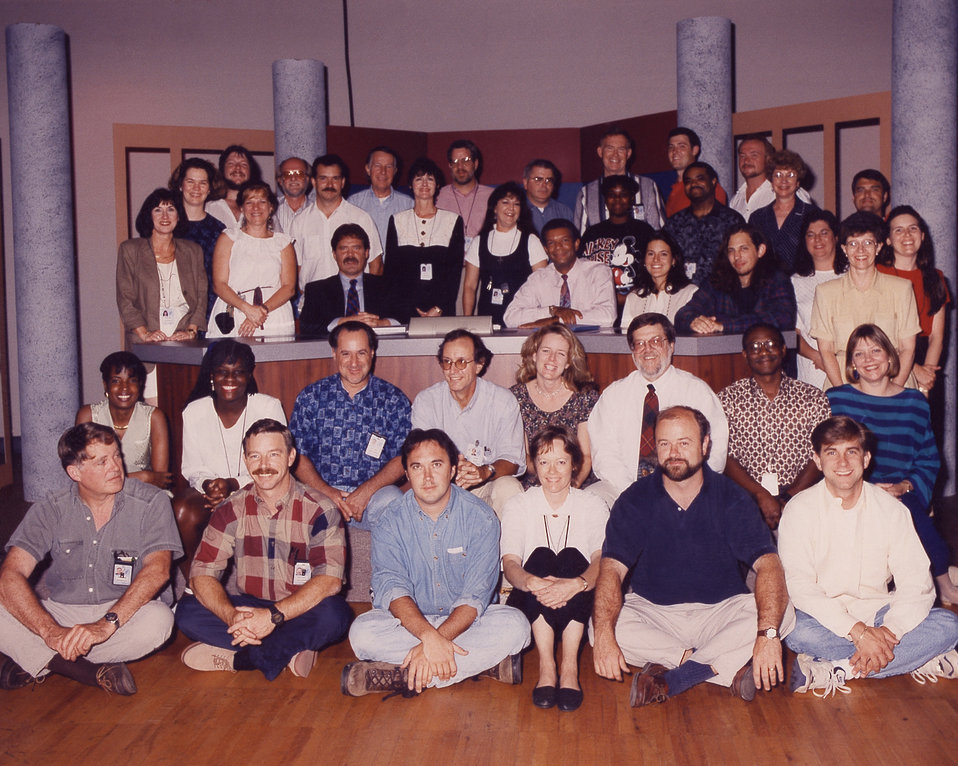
This photo was taken to illustrate the number of staff required to produce a satellite broadcast.